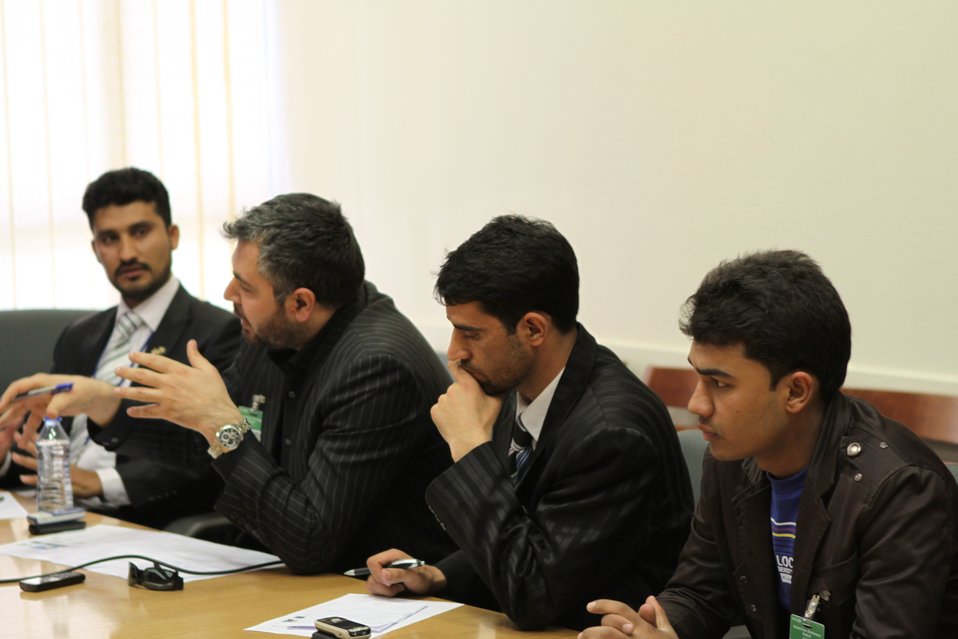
USAID Mission Director Earl Gast Conducts a Media Roundtable with Afghan Media, March 17, 2011